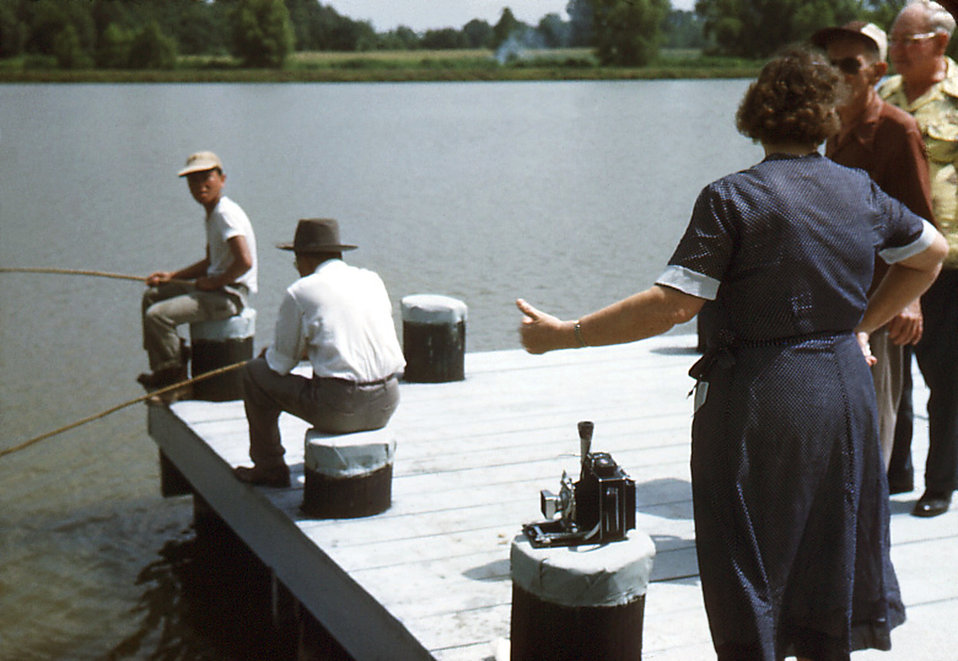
This historic image depicted a number of Carville, Louisiana Leprosarium patients standing on a dock on Lake Johansen, as they were enjoying a day out fishing and visiting with one another. Lake Johansen was named after one of the Leprosarium's Chief Medical Ofiicers, Dr. Frederick A. Johansen."Patients of the U.S. Marine Hospital in Carville, Louisiana, produced a set of 35 mm slides around 1950 from which this image was derived. In 2002, a patient's son donated the set, the only one known in existence, to the museum. The father, a patient at Carville for several years, brought these slides home around 1950 to give his family a snapshot of life at the national leprosarium. The act of quarantining patients for leprosy (HD) remained law in the state of Louisiana until 1957."